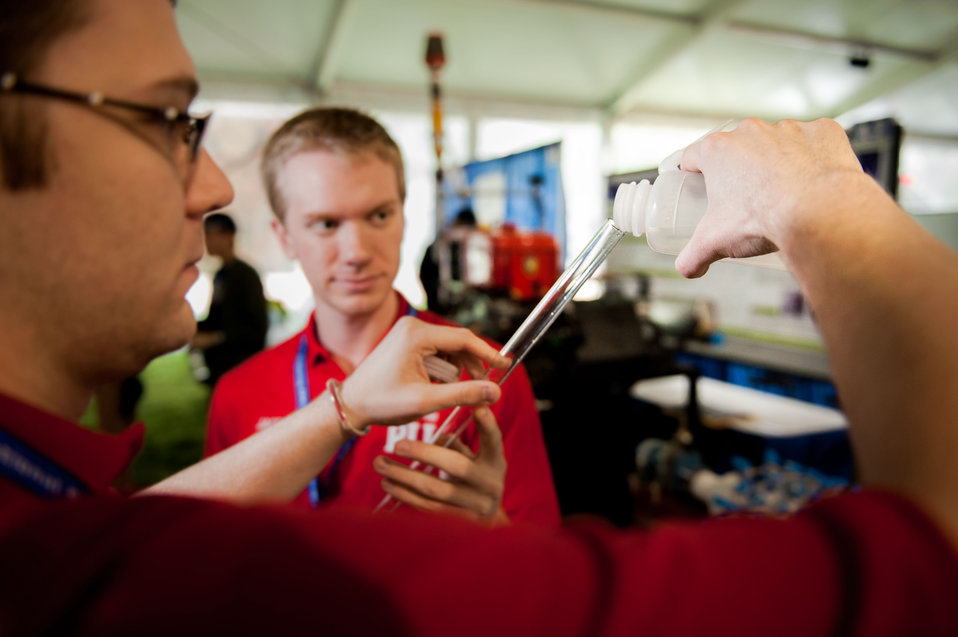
April 18, 2013 - P3 Design Expo, Radford University

Sugar Sand: A Sweet Way to Make Water Safe!
Here, Radford University team members explain how their system better captures contaminants in water using their “sugar sand'.

Radford University P3 Page
Radford University Facebook Page

People Prosperity and the Planet: National Sustainable Design Expo on the National Mall 18-19 April 2013